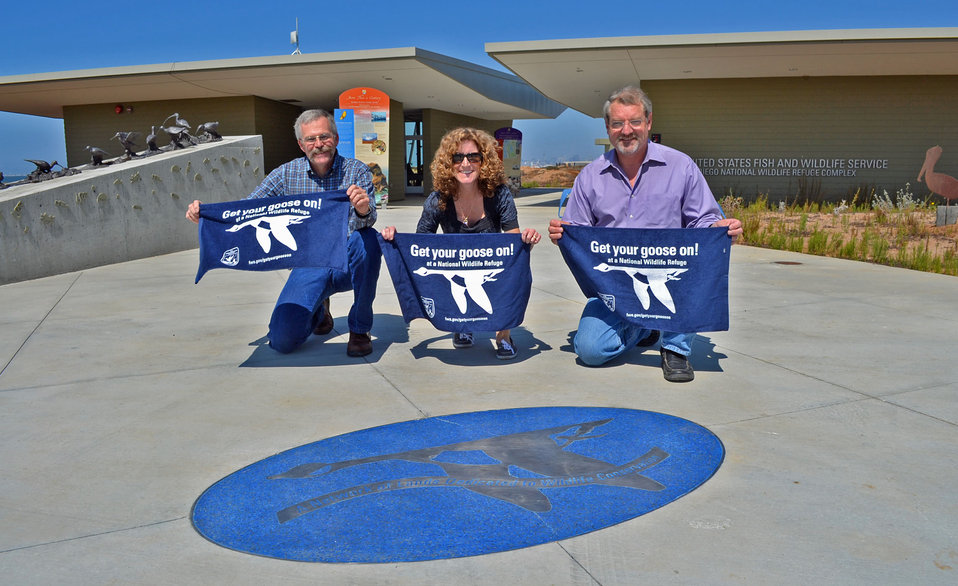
Get Your Goose On! - San Diego Style

Marla Trollan, Paul McKim and Larry Bell Get Their Goose On! at the San Diego National Wildlife Refuge.